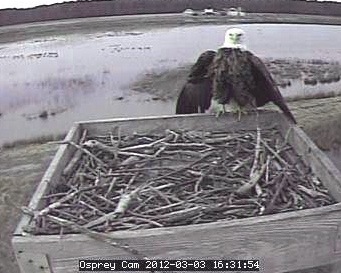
bald eagle checks out the osprey cam...

...at Blackwater National Wildilfe Refuge on MD in this March 3, 2012 image. The Friends of Blackwater National Wildlife Refuge have turned on their popular osprey nest cam for the season. Ospreys usually return to Blackwater around St. Patrick's Day, but Friends webmaster Lisa Mayo reports that ospreys have been sighted on Virginia's Eastern Shore not far from the refuge.